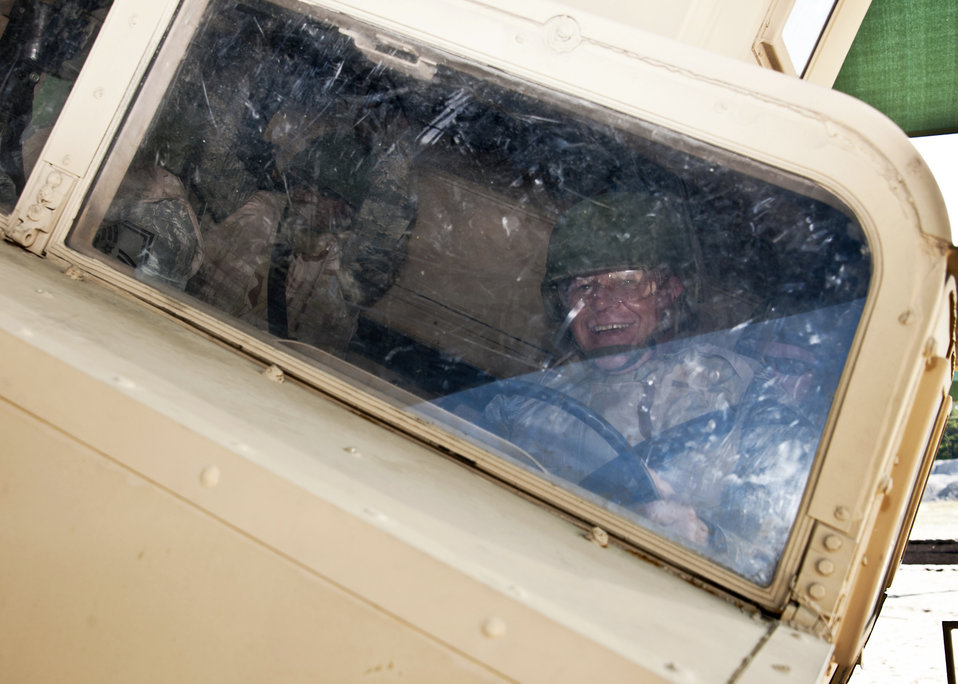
Brave Defender

Chief Master Sgt. of the Air Force James A. Roy experiences a vehicle roll-over in a Humvee with the 96th Ground Combat Training Squadron?s simulator May 6, 2011, at Eglin Air Force Base, Fla. Chief Roy received a hands-on tour of Air Force Materiel Command's